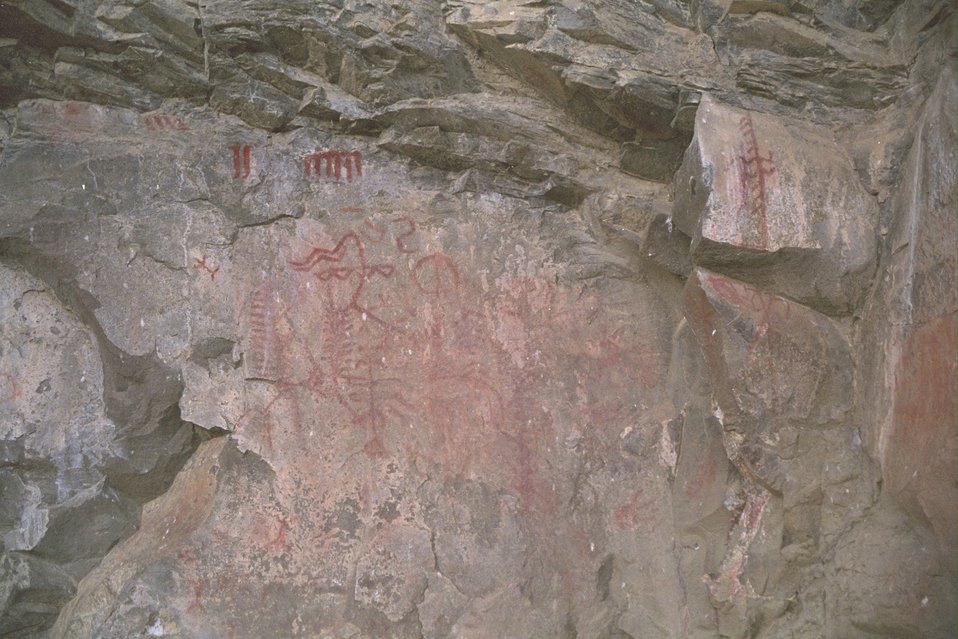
Rock paintings near the takeout at the end of section 2 in the John Day River.